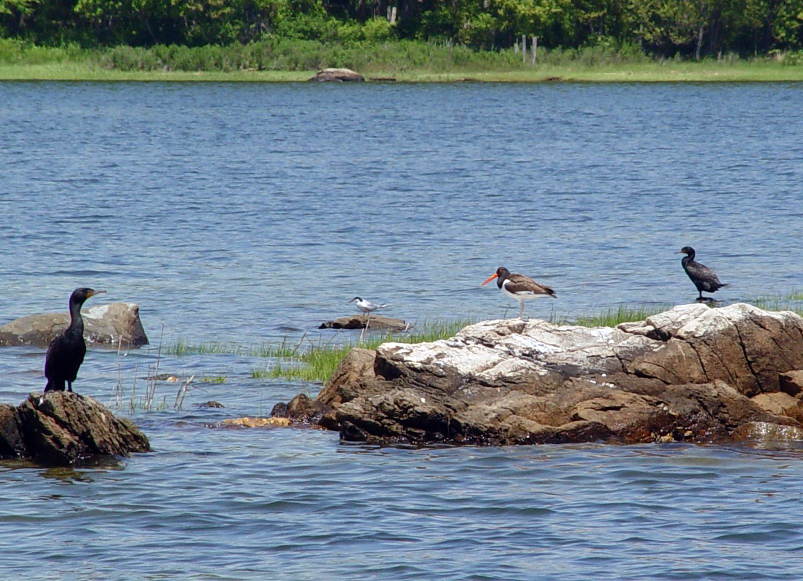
Photo of the Week - Cormorants, Tern and Oystercatcher (RI)

Photo of the Week - 06/20/11.

Cormorants, Tern and American Oystercatcher in Mount Hope Bay near Bristol, RI.